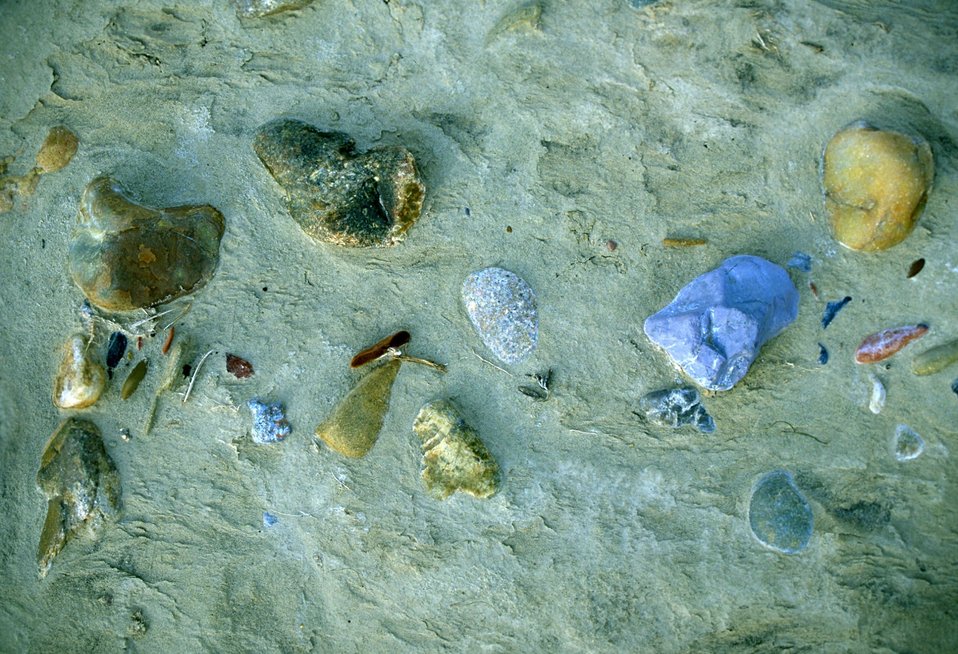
Yellowstone River rocks and debris